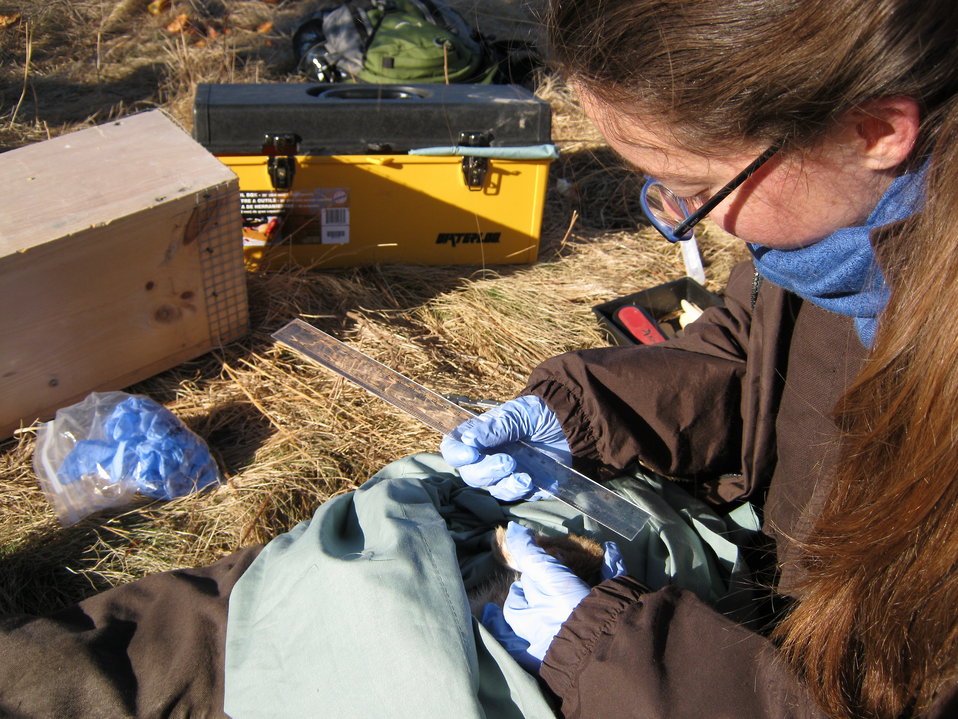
Finding New England cottontails

A Service wildlife intern takes measurements of the rabbit's ears.